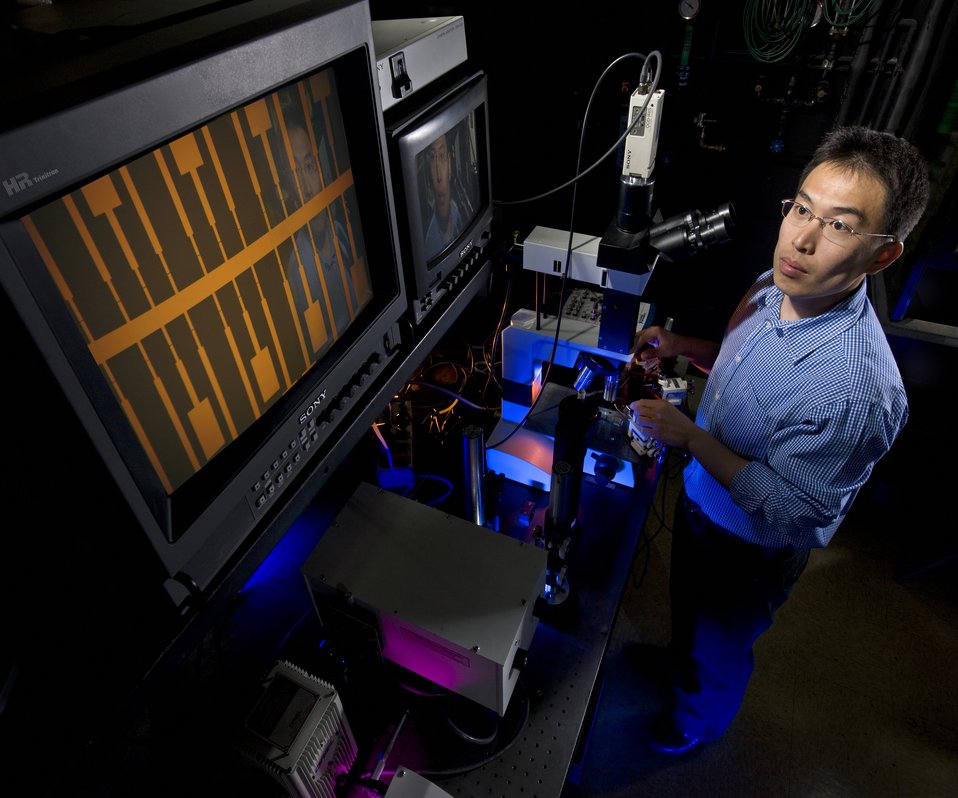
Sandia research Xinjian Shou measures the electronic and optical properties of carbon nanotube devices in a probe station.

Research at SNL have created the first carbon nanotube device that can detect the entire visible spectrum of light, a feat that could soon allow scientists to probe single molecule transformations, study how those molecules respond to light, observe how the molecule change shapes and understand other fundamental interactions between molecules and nanotubes. The research could be used for a number of applications, such as an optical detector with nanometer scale resolution, ultra -tiny digital cameras, solar cells with more light absorption capability, or even genome sequencing.